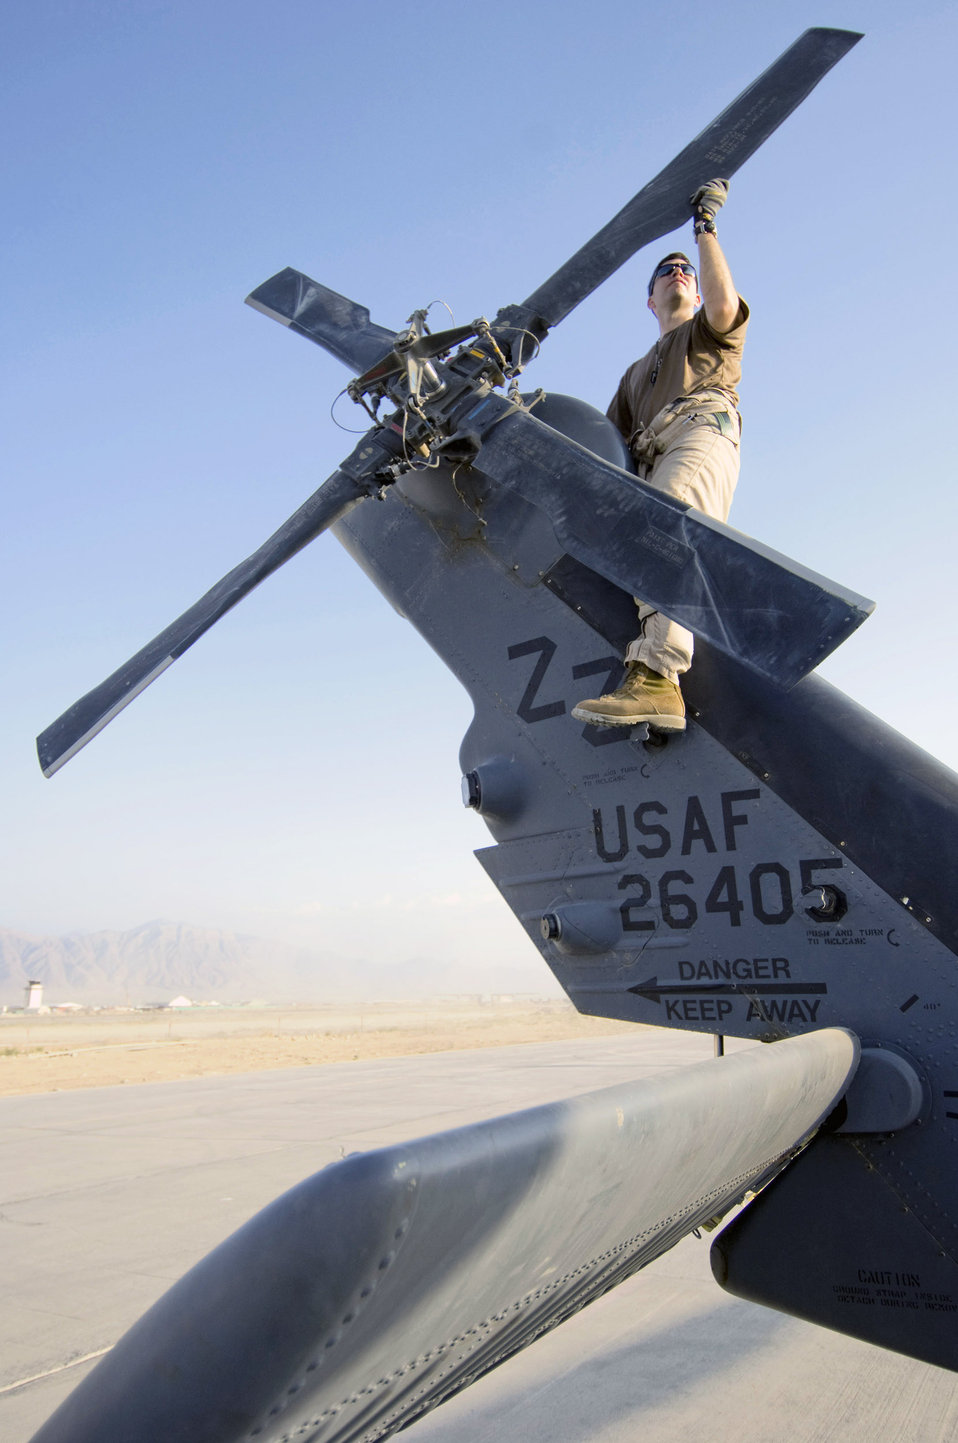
Flying with the Pave Hawks

Staff Sgt. Gerald Messier, a 33rd Expeditionary Rescue Squadron flight engineer, checks the rear rotor on an HH-60G Pave Hawk before takeoff Aug. 2 at Bagram Air Base, Afghanistan. Before every mission, the flight crew must check to ensure that all the systems are operational. Sergeant Messier is deployed from the 33rd Rescue Squadron at Kadena AB, Japan.